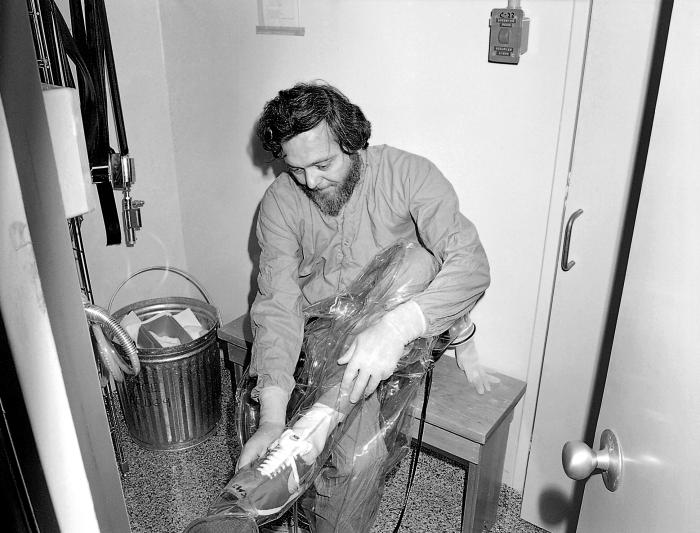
This 1978 photograph depicted Dr. Karl M. Johnson putting on a positive-pressure suit while he was inside the 'Suit Lab' of one of the CDC's early Maximum Containment Laboratories.